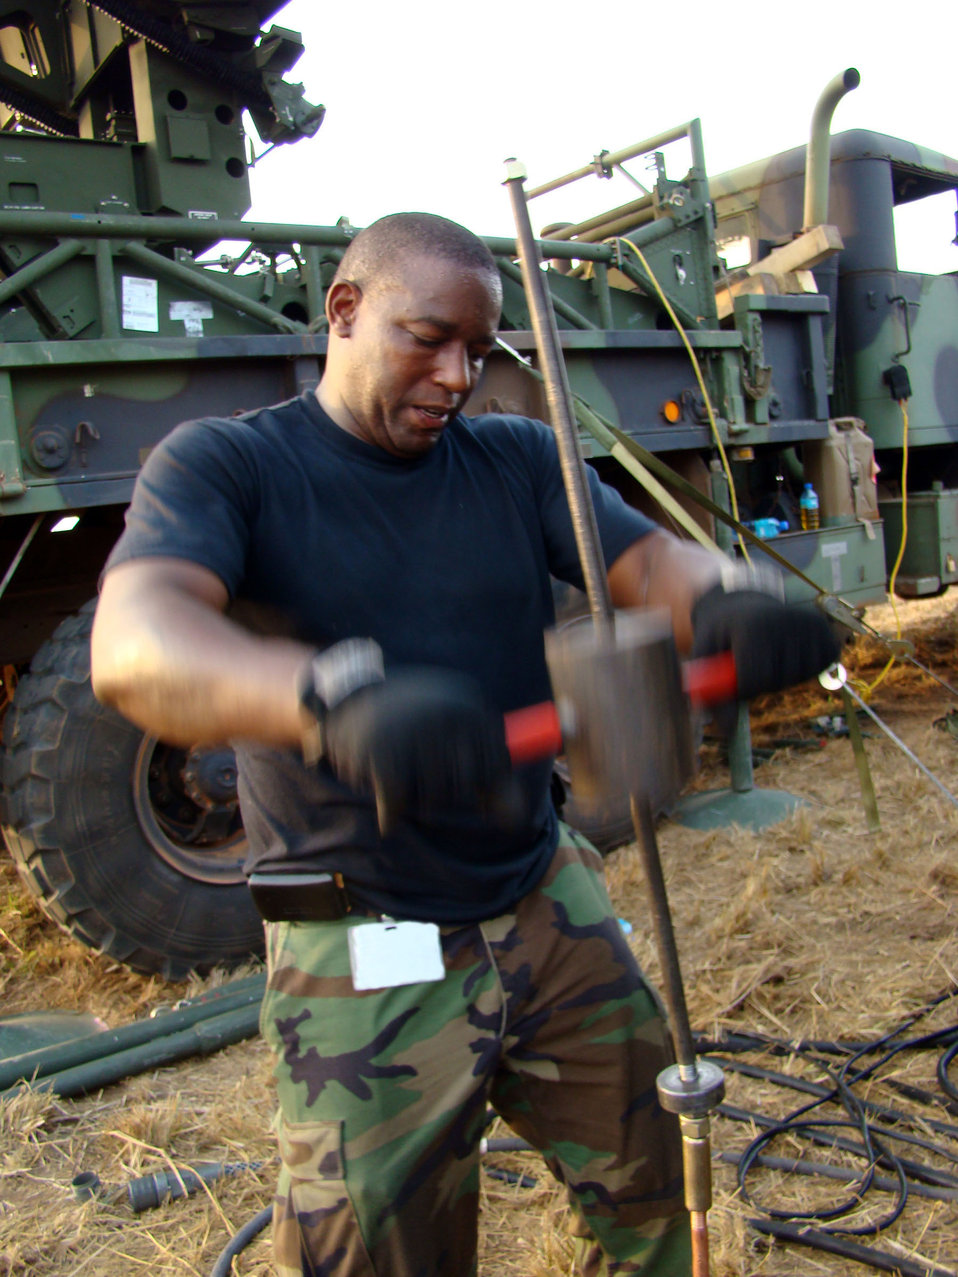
Multiservice team provides presidential support in Africa

Tech. Sgt. Andrew Binns drives a ground rod for a radar shelter into the ground as he and his teammates set up communications equipment Feb. 14 in Accra, Ghana. The Airmen are part of a multiservice team providing communications capabilities in support of President George Bush's visit to the West African nation. Sergeant Binns is a ground radar systems craftsman from the 603rd Air Control Squadron at Aviano Air Base, Italy.